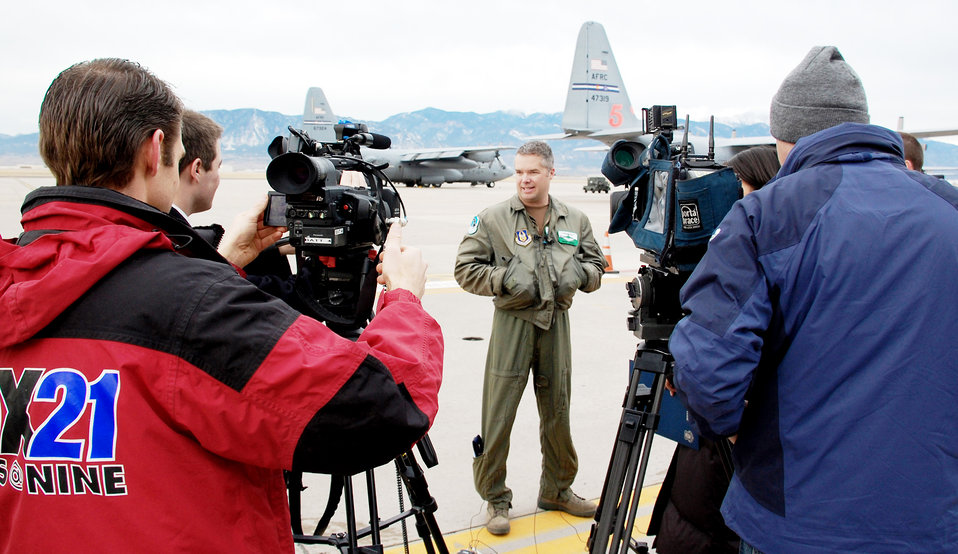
Colorado reservists deploy in support of Haiti earthquake relief

Maj. Brad James meets with Colorado Springs, Colo., media before departing in support of Operation Coronet Oak Jan. 22, 2010, from Peterson Air Force Base, Colo. Two C-130 Hercules and approximately 50 Air Force reservists from the 302nd Airlift Wing left Colorado to fly missions out of Puerto Rico in support of Haitian relief efforts. Major James is a 731st Airlift Squadron pilot.